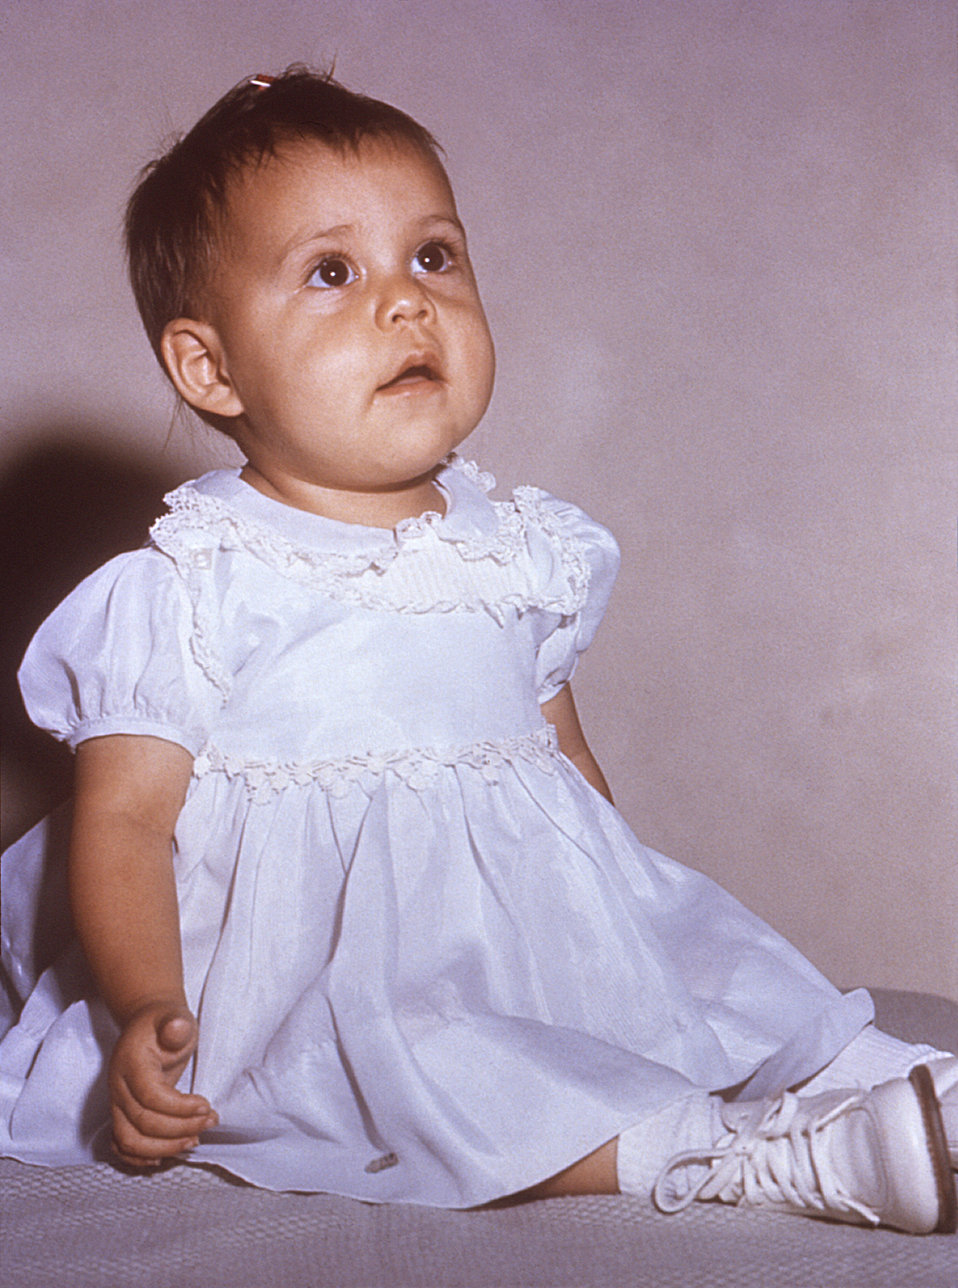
This infant was suffering from a case of malnutrition, but five months post-treatment she was exhibiting a robust demeanor.